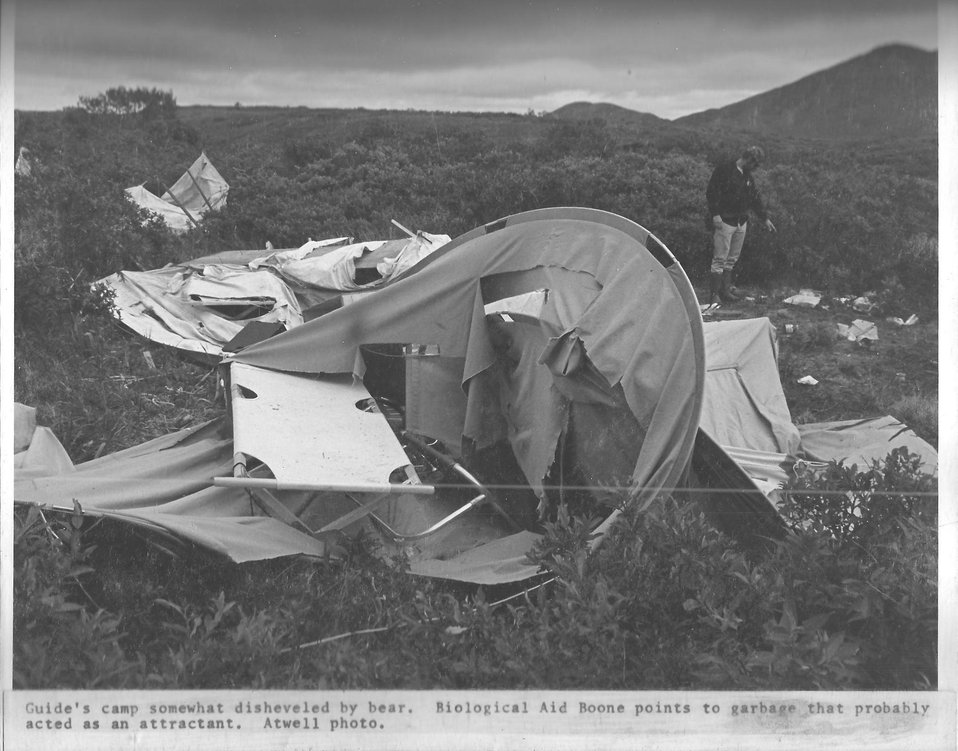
(1972) Damaged camp

Credit: USFWS

Source and Contact: Kodiak National Wildlife Refuge